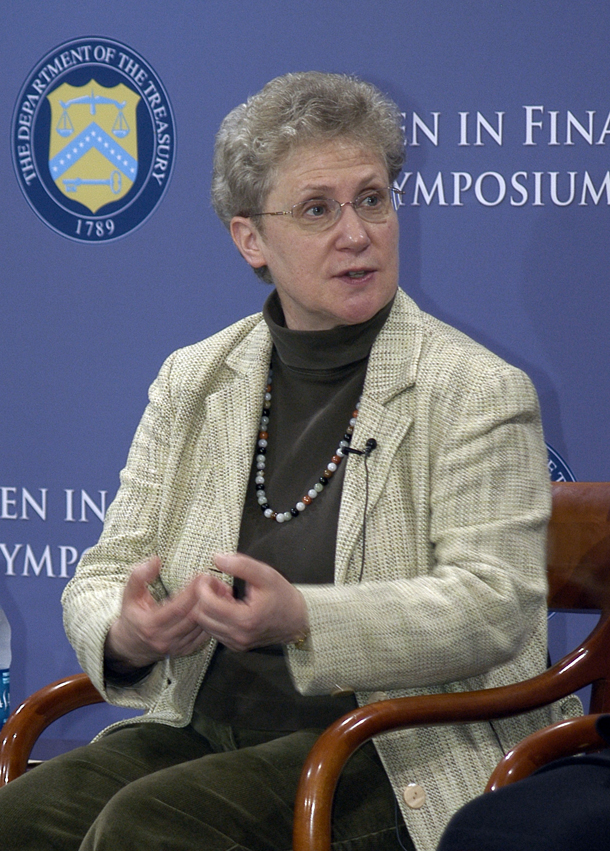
Women in Finance Symposium, 03/29/2010

Senior U.S. Investment Strategist for Goldman Sachs Abby Joseph Cohen at the Women in Finance Symposium at Treasury on March 29, 2010.